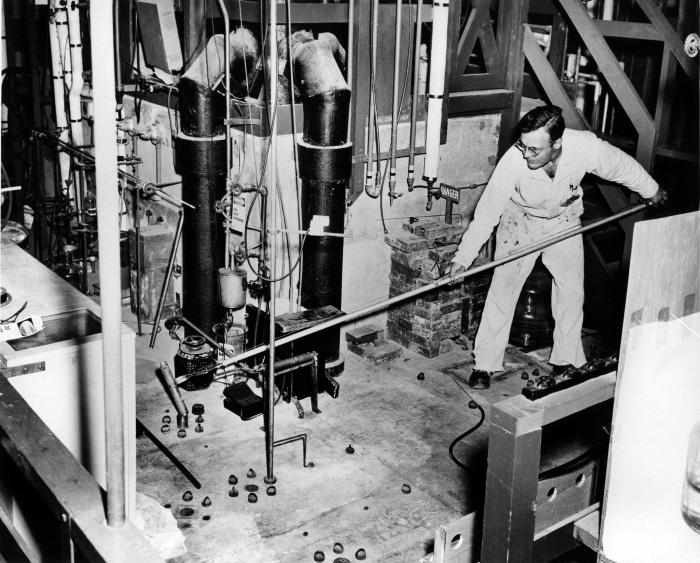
This historic 1950 image, provided by the Center for Disease Control's (CDC), National Institute for Occupational Safety and Health (NIOSH), depicted a technician who was in the process of manipulating radioactive material while using metallic 'extension tongs', thereby, keeping him at a safe distance from the potentially dangerous material. Without knowing the possible level of contaminants expelled from the radioactive substance, wearing only a white jump-suite, may or may not have been what today would be deemed adequate protection against contamination.